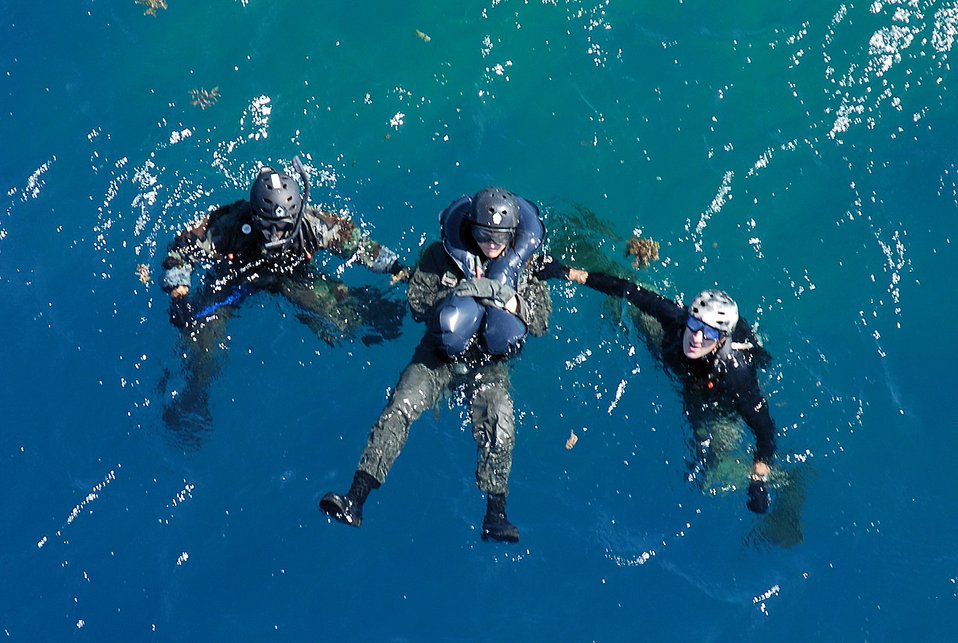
Safe and sound

Airmen from the 31st Rescue Squadron secure a